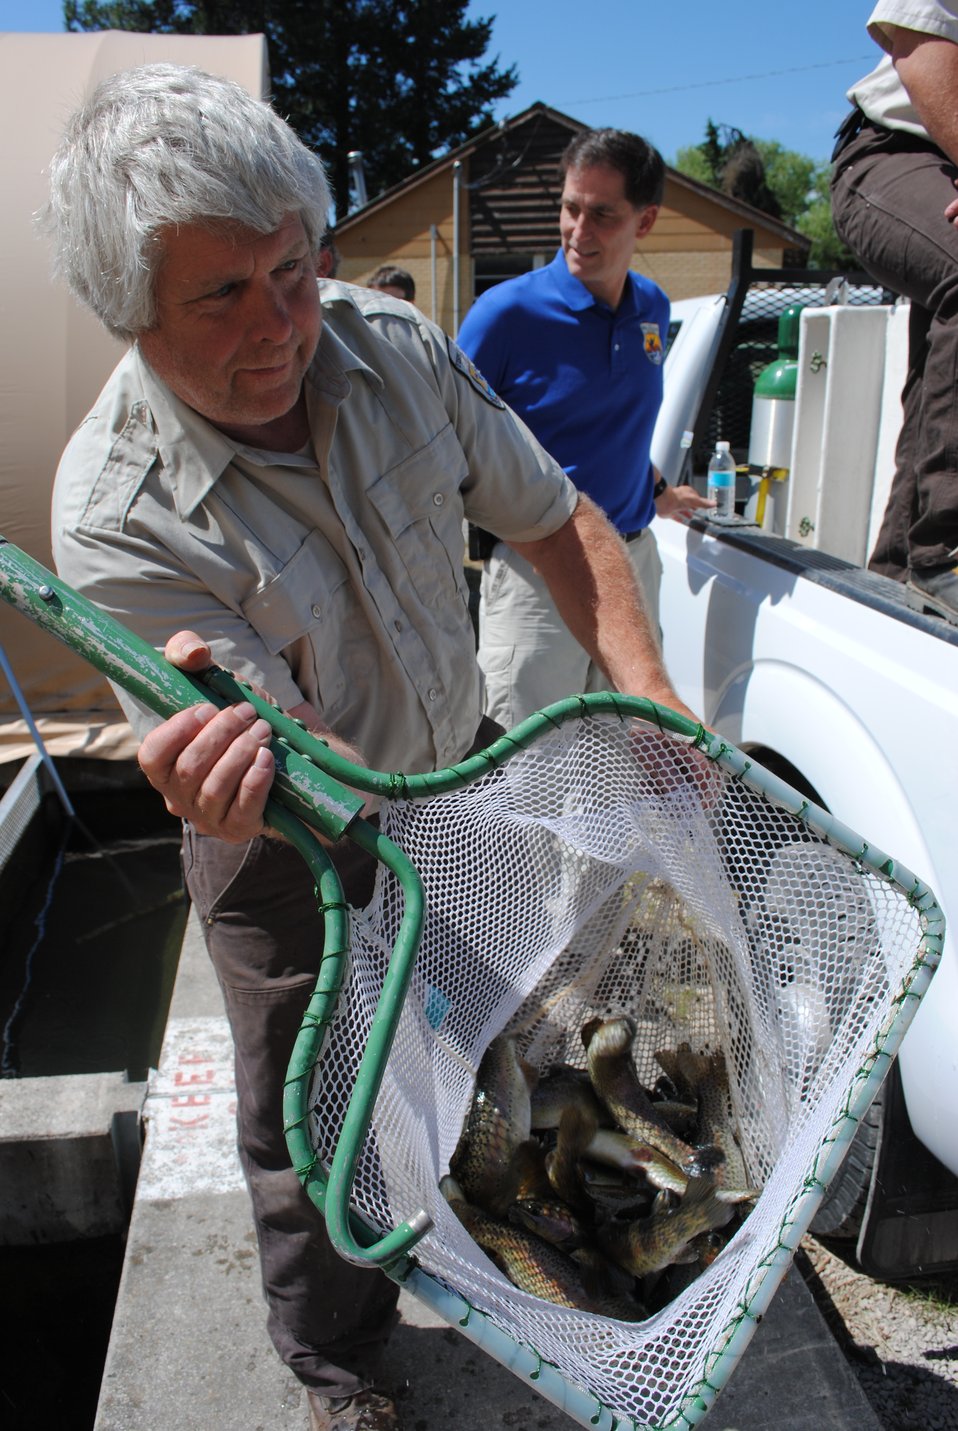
Hatchery Employee, Gar Holmes, Assists With the Fish Transfer

Creston National Fish Hatchery employee Gar Holmes, assists with transfering trout from the raceways into the fishdistrabution truck for stocking. Director Dan Ashe helped net fish to be loaded in the fish truck.